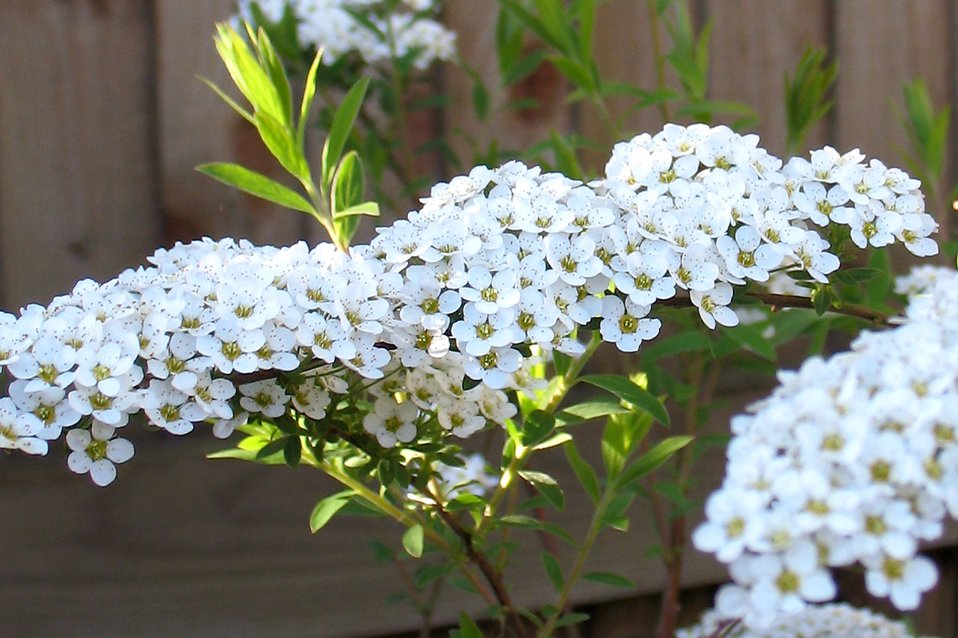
White flowers on bush.